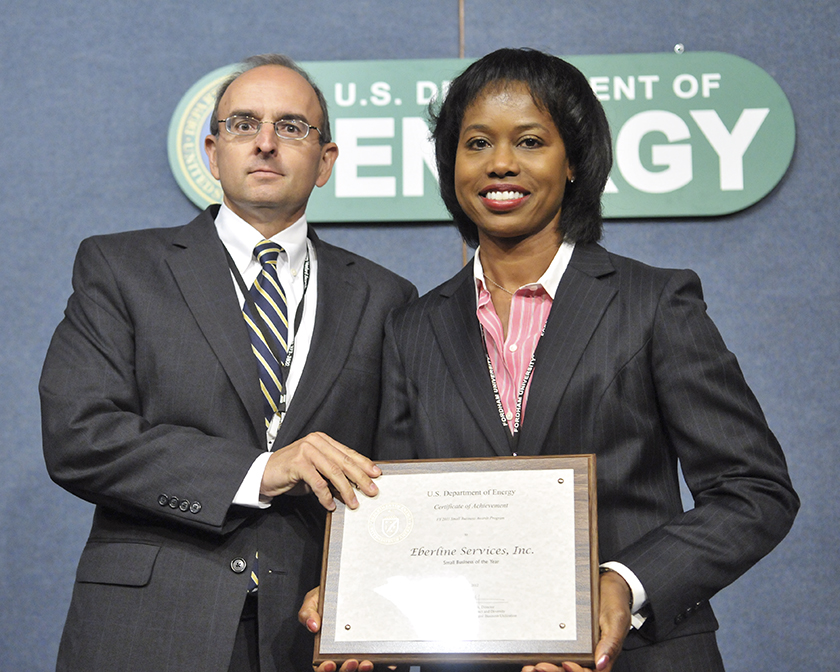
Small Business Awards Ceremony

On June 27 the Energy Department had the pleasure of publicly recognizing the FY 2011 Small Business Award Winners at an award ceremony at our headquarters in Washington, DC. We are very grateful for the extraordinary work that our 14 awardees have done to further the mission of the Energy Department. The awards program celebrates small businesses and their advocates in their many achievements and successes in the work they do with the Energy Department.